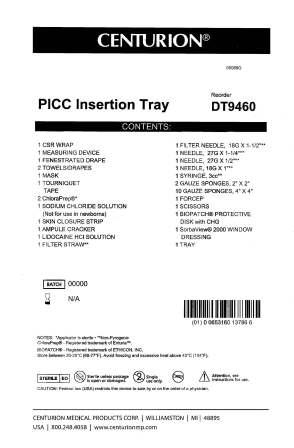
RECALLED - Convenience kits which contain bacteriostatic sodium chloride solution by American Regent

April 1, 2011 - Product Recall - Centurion Medical Products Initiates Voluntary Recall of Customized Convenience Kits (including select Central Venous Catheter, PICC Insertion, and VAD Trays) that contain American Regent’s Bacteriostatic Sodium Chloride Injection, USP, 0.9% 30 mL Multiple Dose Vials.